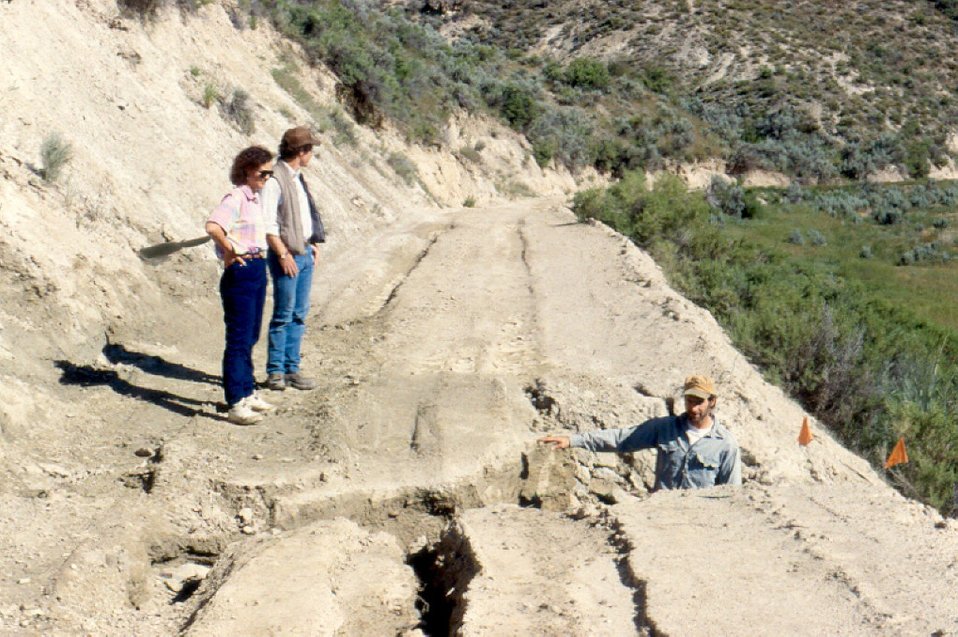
Roads Recreation Erosion Salmon Field Office UCSC Upper Columbia Salmon Clearwater District